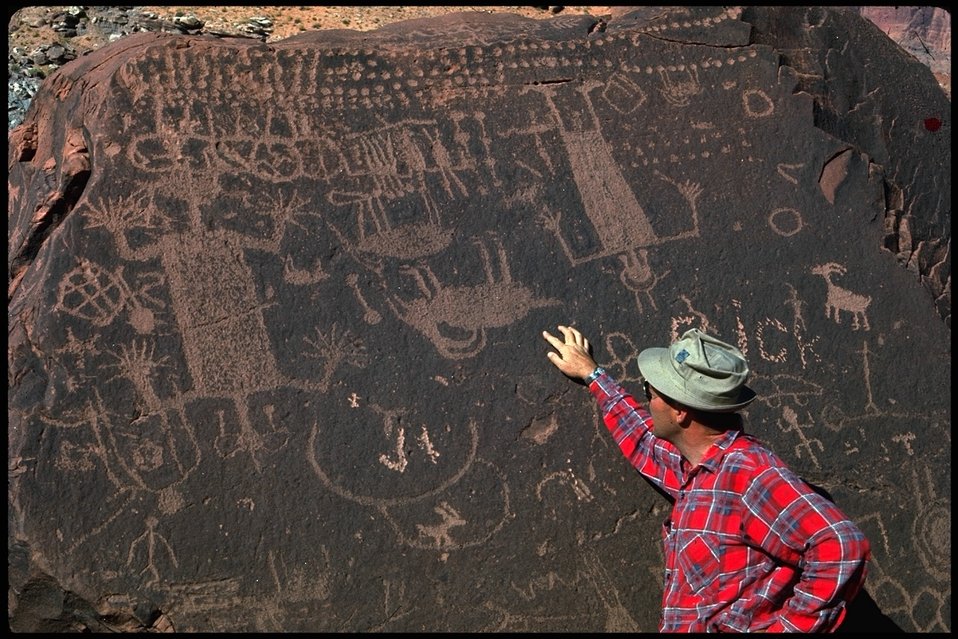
A BLM employee examining some Petroglyphs (Rock Art).